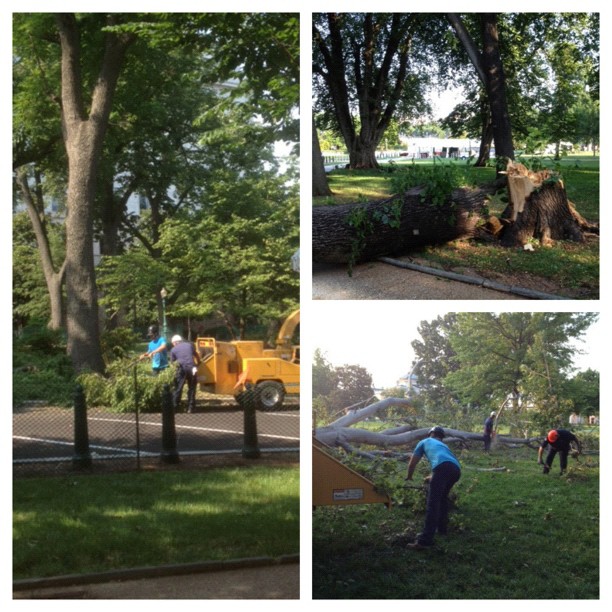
AOC crews worked around the clock to clean the grounds from #derecho. Capitol ready for 4th.